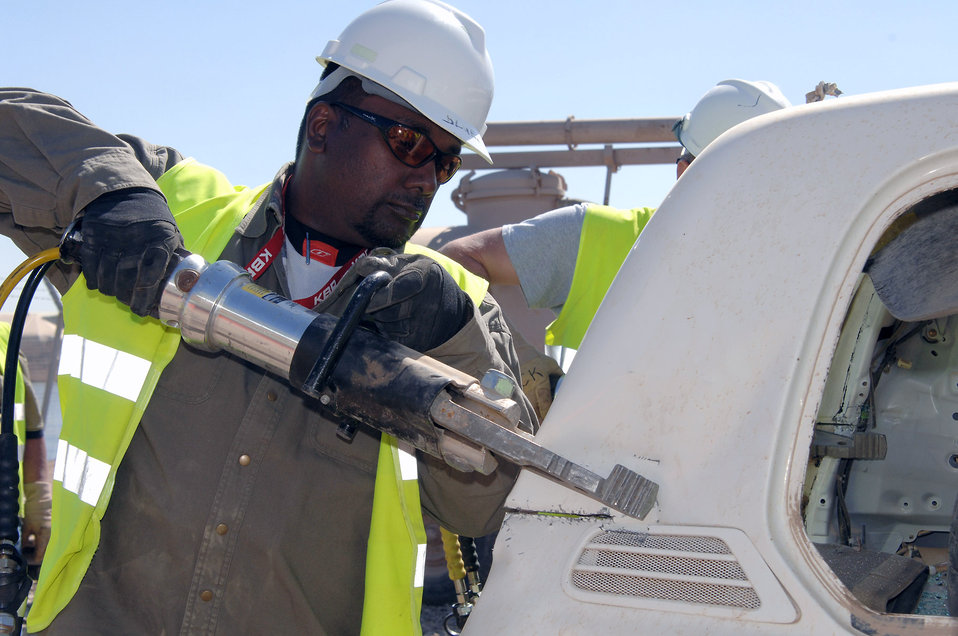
Balad Airmen teach contractors lifesaving skills

A KBR Theater Transportation Mission Recovery senior mechanic tests the strength of a combination spreader shear, or